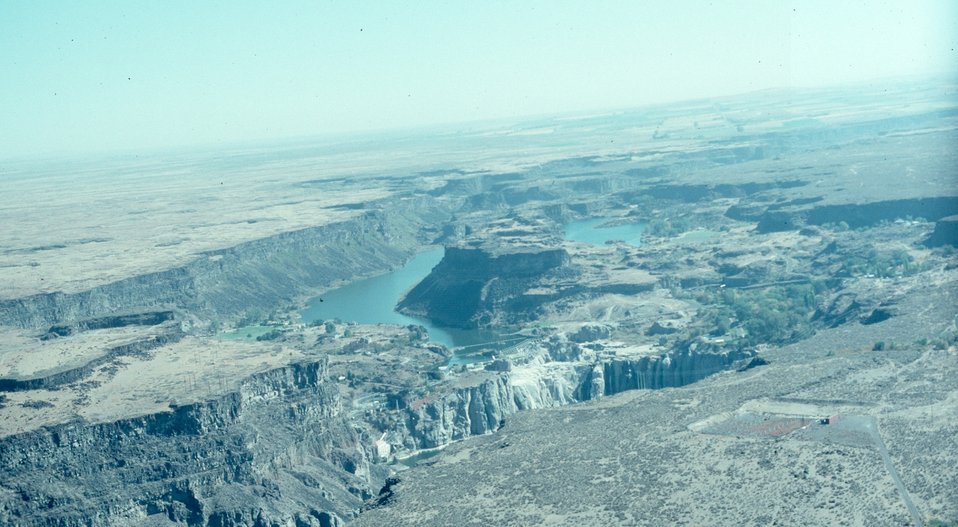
Erosion NE of Twin Falls Shoshone Field Office USRD Upper Snake River District